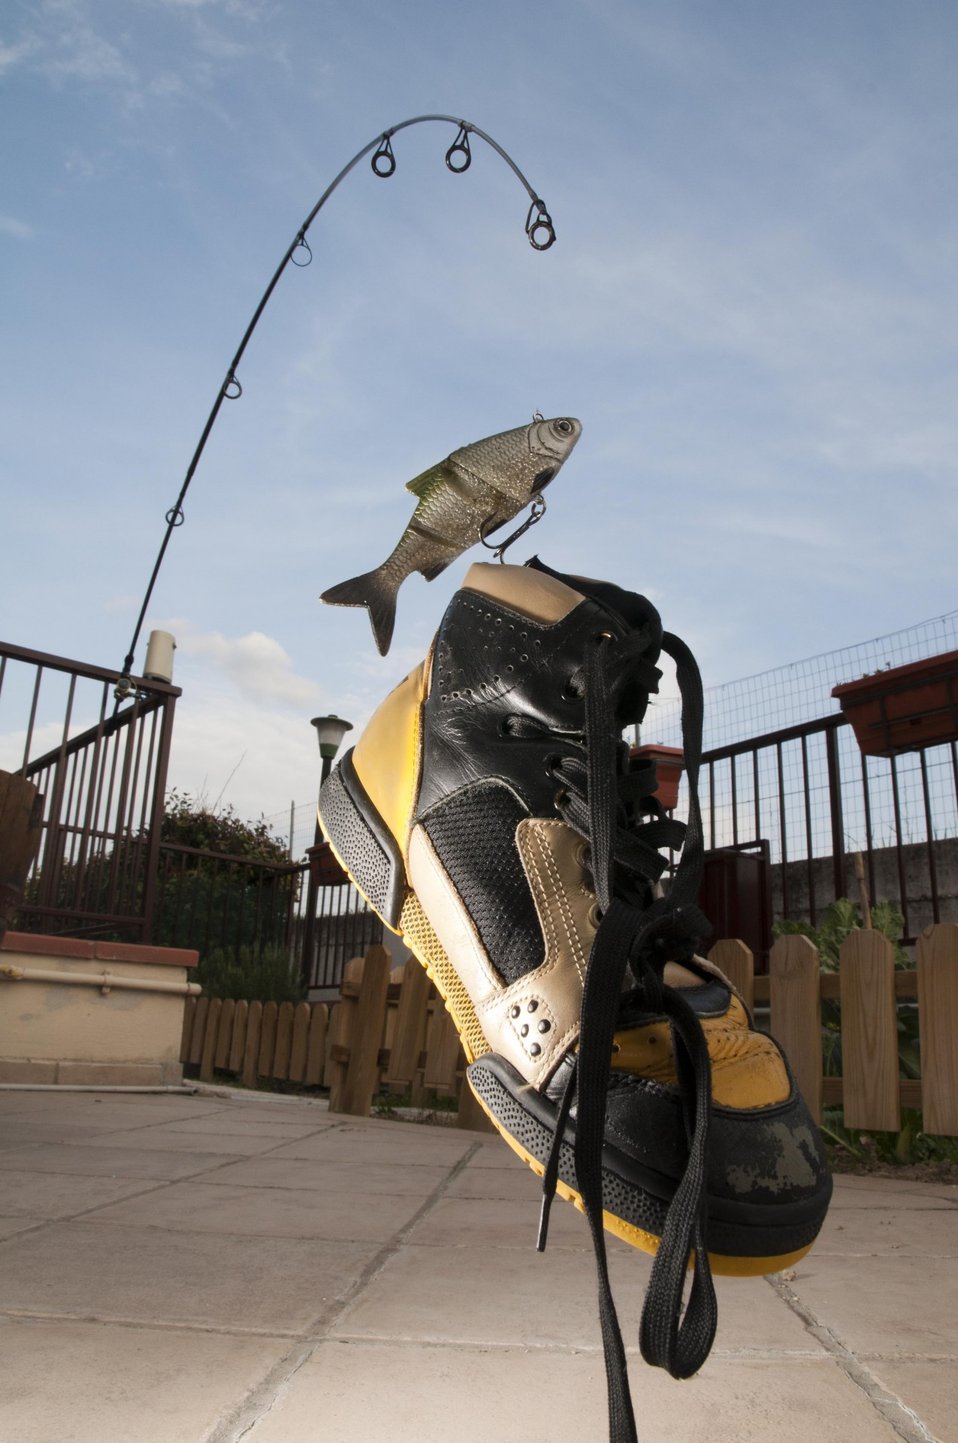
April fool's day

Fisherman struggling with a usual prey.